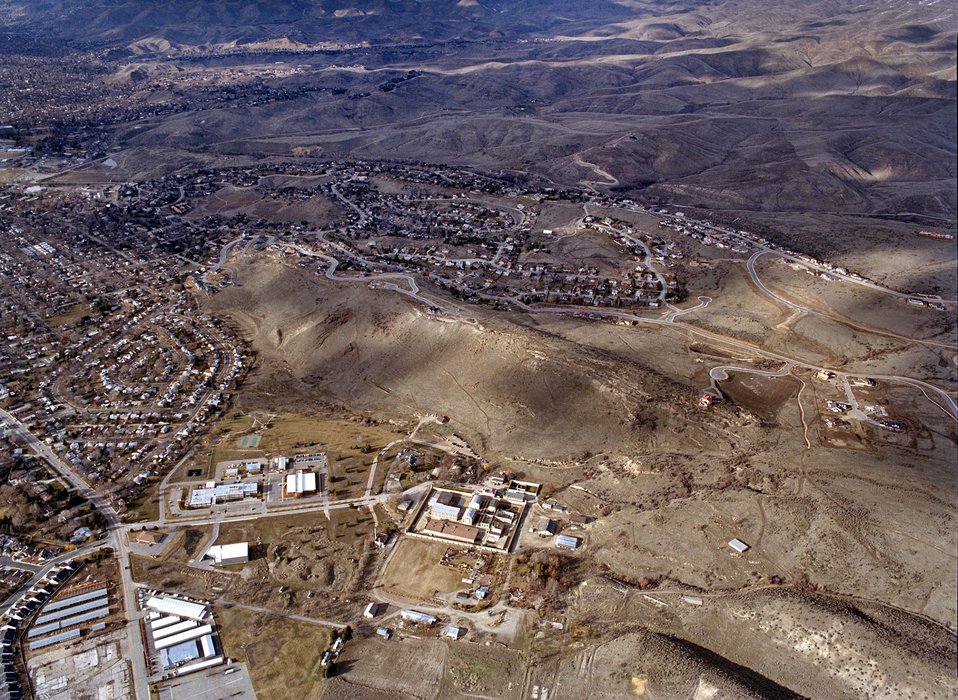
Recreation on the Boise Front Foothills Aerial Camels Back Park Four Rivers Field Office LSRD Lower Snake River District